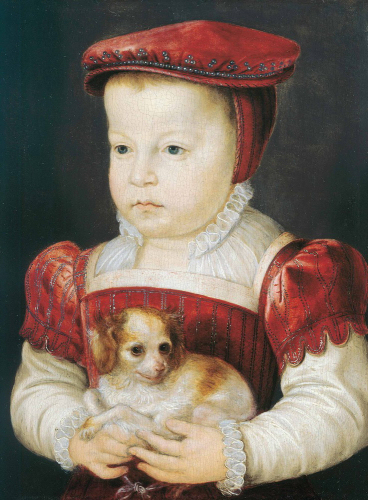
Hercule-Francois Duke of Alencon